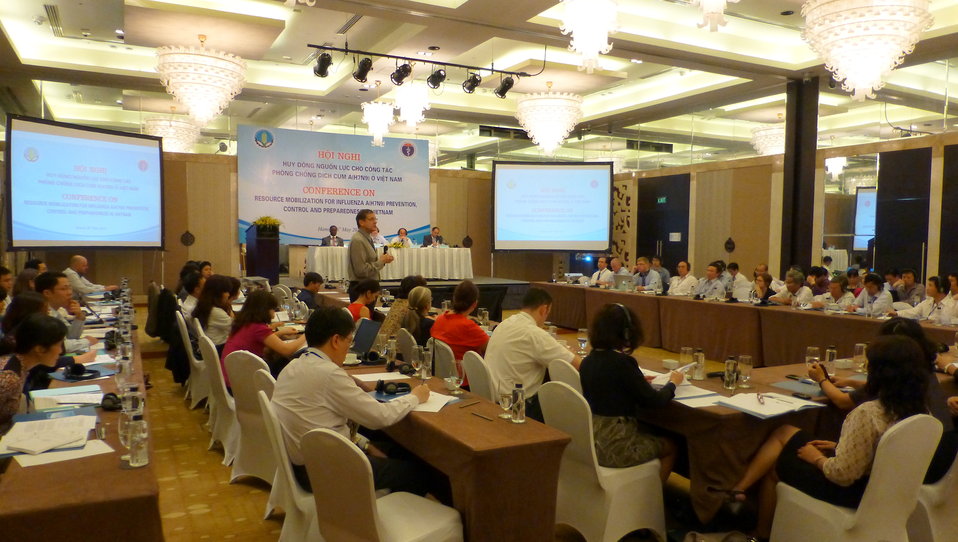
Conference on Resource Mobilization for Influenza A (H7N9) Prevention, Control and Preparedness in Vietnam

Hanoi, May 6, 2013
Supported by USAID Vietnam